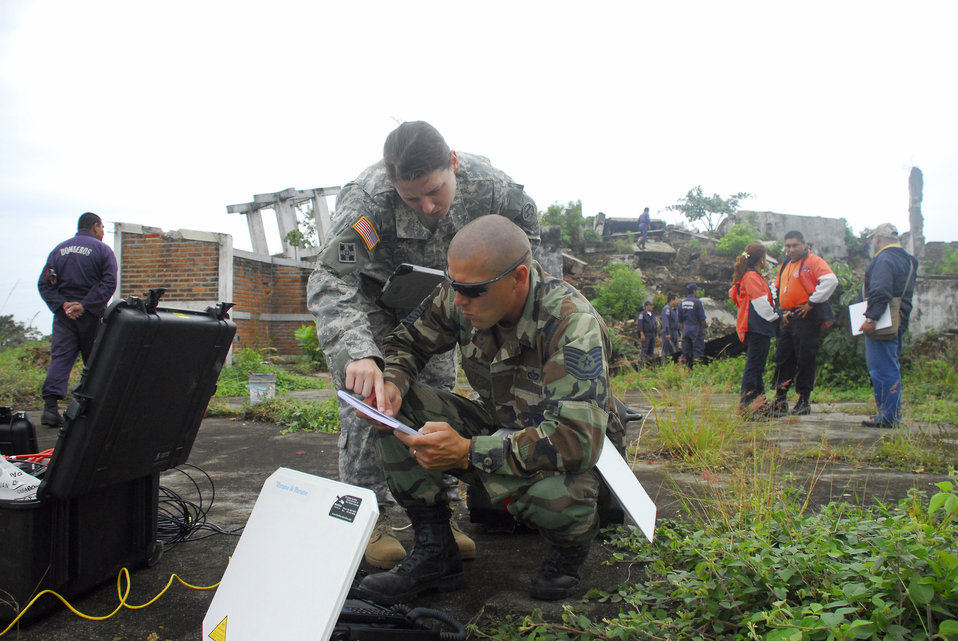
Civil engineers enhance El Salvador exercise with imagery

Tech. Sgt. Mike Vaughn and Army Capt. Sarah Williams set up a field video teleconferencing unit to send imagery gathered here to the United States to assist with the exercise Fuerzas Aliadas Humanitarias 2008 May 5 from the grounds of a collapsed and abandoned coffee factory in El Salvador. The regional disaster relief exercise involved military and civilian agencies from the region. By capturing imagery of damage from a 2001 earthquake, participants in the exercise have a simulated yet realistic view of damage to help them make accurate decisions regarding the relief process. Sergeant Vaughn and Captain Williams are Joint Task Force-Bravo civil engineers.